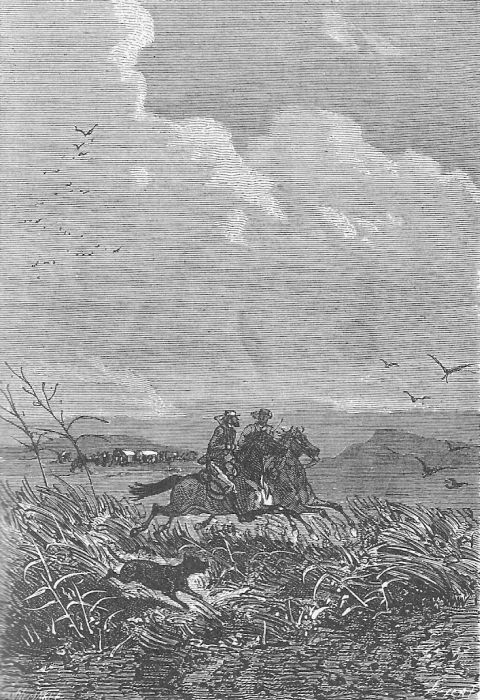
An illustration from Jules Verne's novel 'The Adventures of Three Englishmen and Three Russians in South Africa' (1870) drawn by Jules Férat. Polski: Ilustracja powieści Juliusza Verne'a 'Przygody trzech Rosjan i trzech Anglików w południowej Afryce' (1870) autorstwa Julesa Férata. Français : Jules Verne: 'Aventures de trois russes et de trois anglais dans l’Afrique australe' (1870), dessins par Jules Férat.